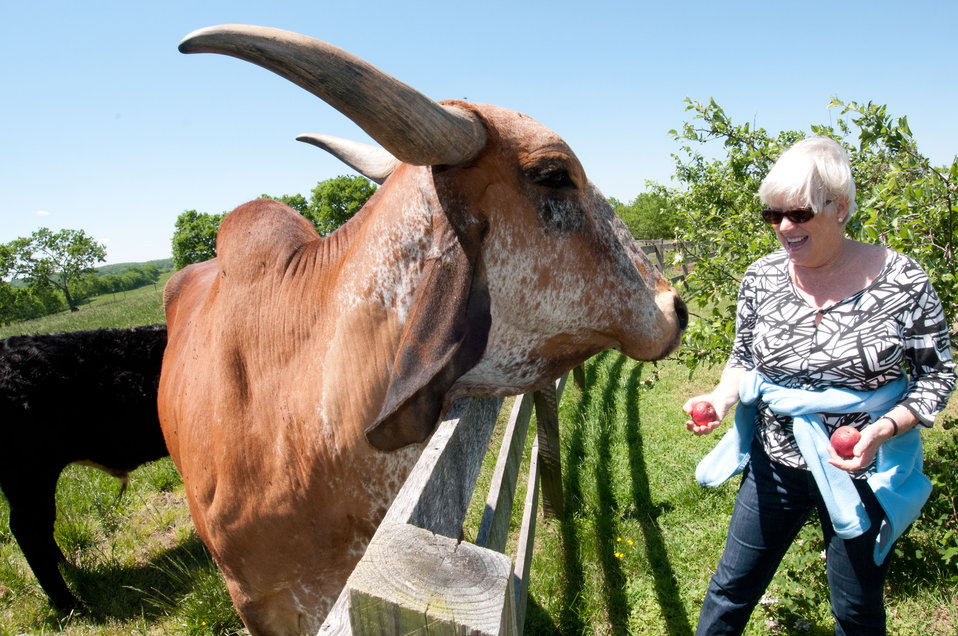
Bunny the Brahma cow is always ready for photos, a scratch on the neck or a juicy apple from Rossie Fisher, co-owner of Brookview Farm in Manakin-Sabot, VA, on Thursday, May 5, 2011.This is one of many farms participating with Fall Line Farms a local food cooperative in the Richmond, VA area that offers a wide variety of household food staples and specialty items on an ever changing inventory of fruits, vegetables, meats, soaps, eggs, cheeses, flowers, honey, pastas, sauces, syrups, baked goods, mushrooms, flour and grains. Suppliers post what they have on a Lulus Local Food online listing and customers can make their selection. Every Thursday suppliers deliver orders to, one of several pick-up points, designated by the customers in or around the Richmond area.